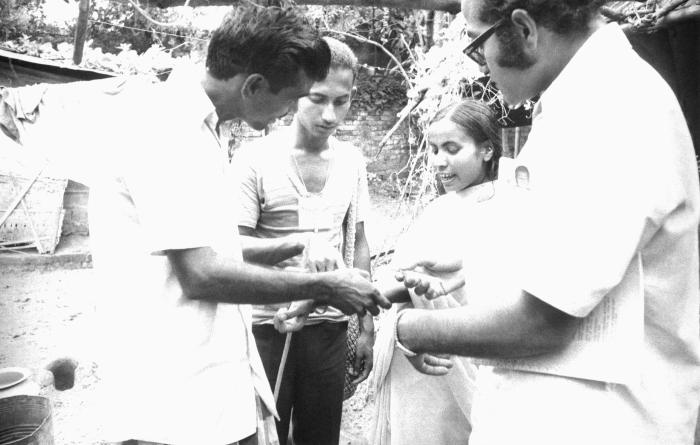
This image depicted World Health Organization (WHO) epidemiologists Dr. Ali Mourad (right, wearing glasses), and an Egyptian associate (left, rear) conducting vaccination training, which involved resident eradication team volunteers actually practicing the vaccination technique on each other. There were a number of Egyptians on the WHO team, and 22 nationalities were represented on the entire Bangladesh eradication team roster.